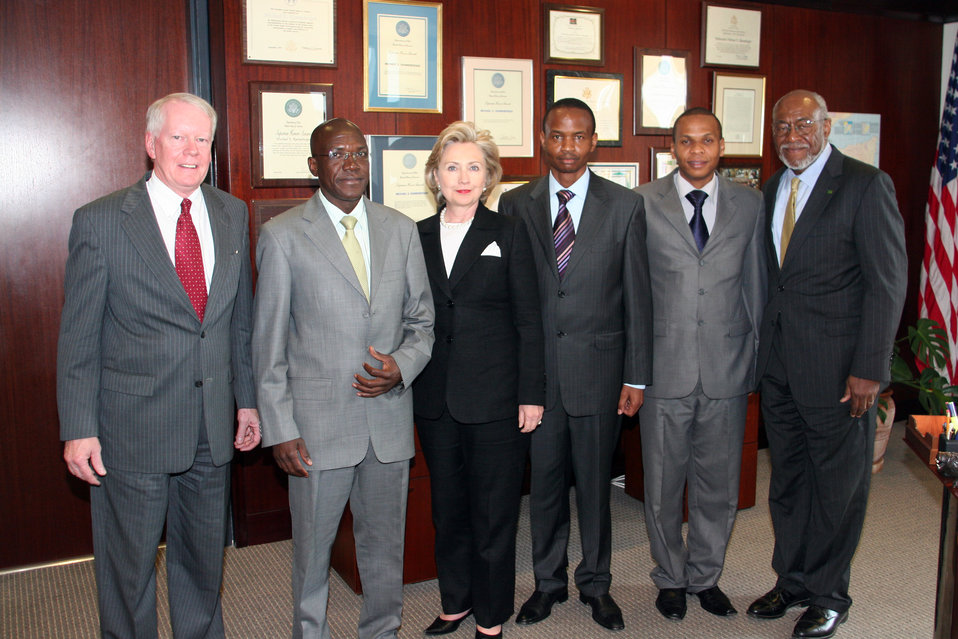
Secretary Clinton at U.S. Embassy in Kenya

U.S. Secretary of State Hillary Rodham Clinton at the U.S. embassy in Nairobi, Kenya August 6, 2009.